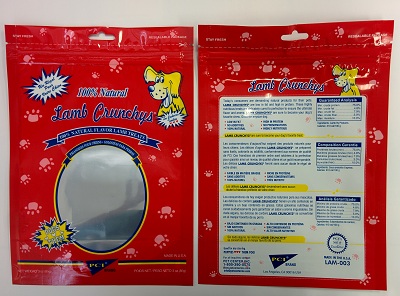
RECALLED - Lamb Crunchy's Dog treats

May 27, 2014 – Product Recall – Pet Center, Inc. Voluntary Recall of 3 oz bag of Lamb Crunchy’s Because of Possible Health Risk.